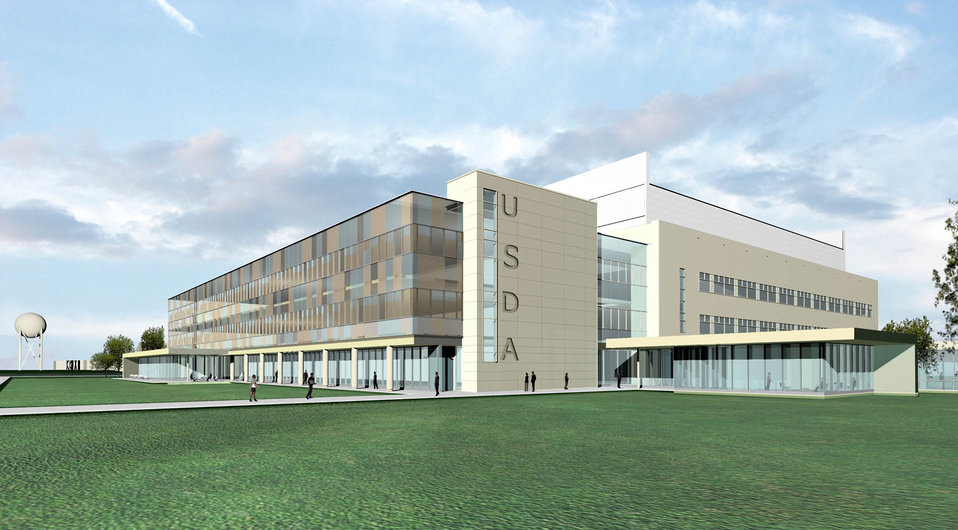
This is an image of the U.S. Department of Agriculture (USDA) research facility in Ames, IA.